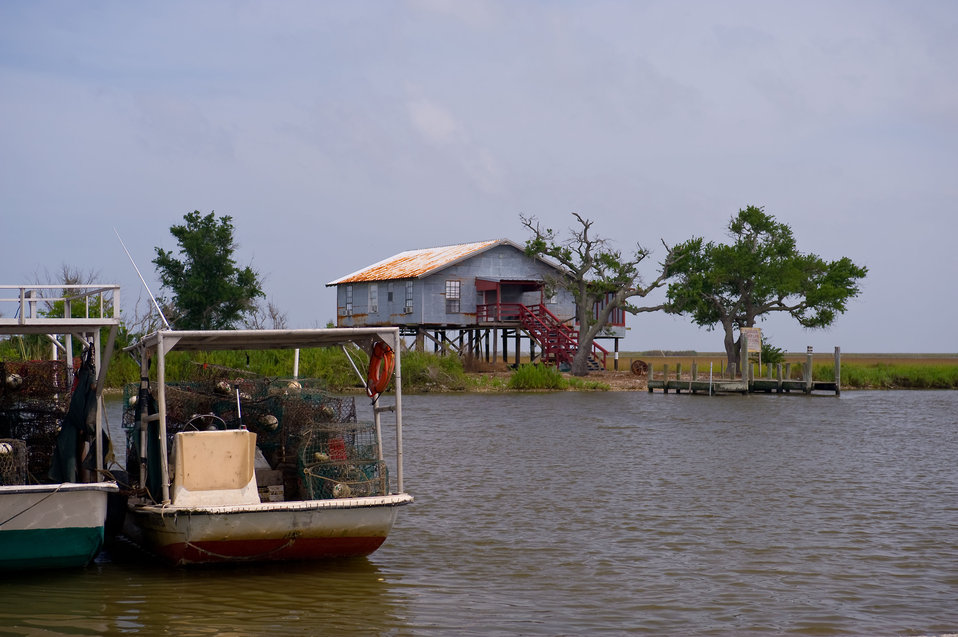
Living on the Gulf

May 13, 2010.